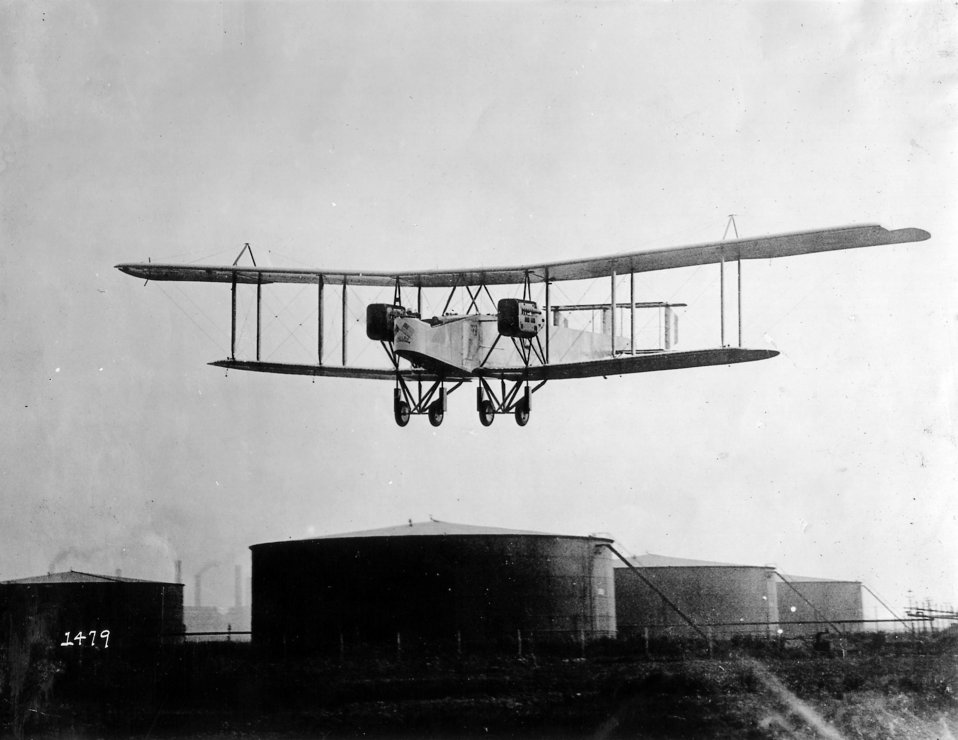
Handley-Page two-engined bomber

EARLY YEARS -- Handley-Page two-engined bomber in flight over oil tanks. The outbreak of World War I led to this design of the first two-engined bomber.